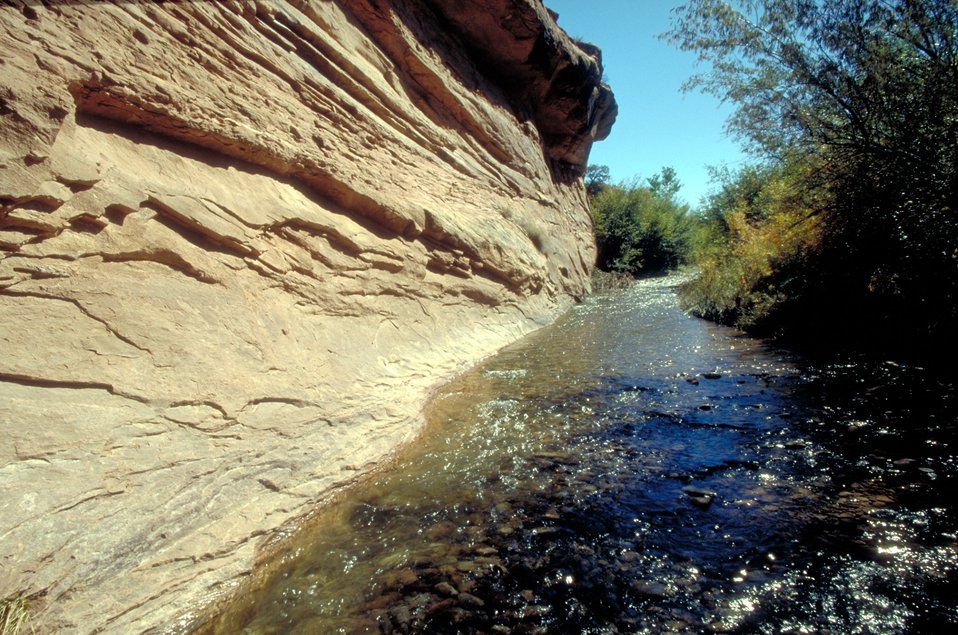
South Fork of Mill Creek near Moab, Utah.